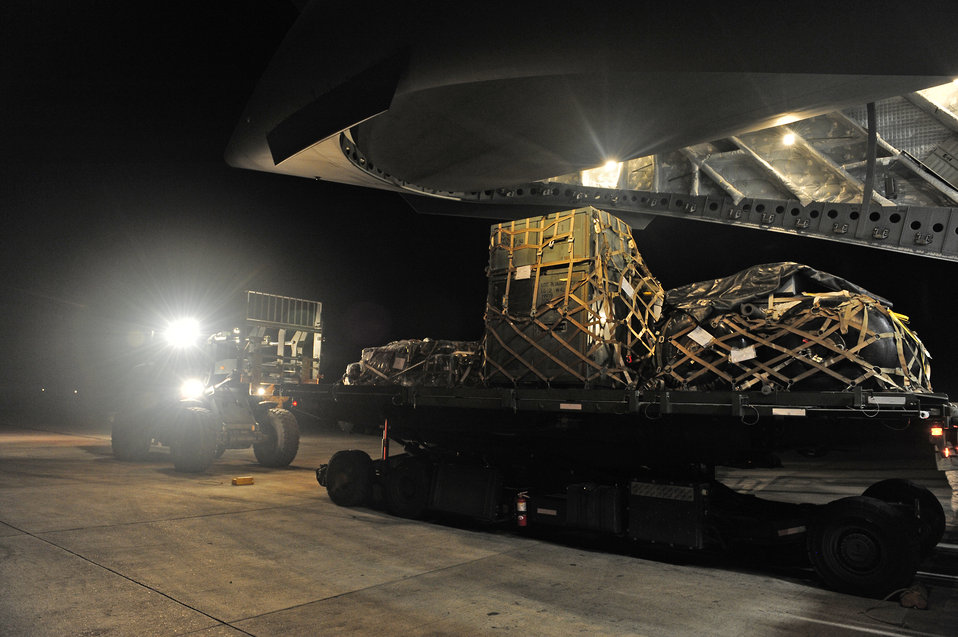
Haiti Earthquake Relief

Airmen offload cargo from a C-17 Globemaster III aircraft from Charleston Air Force Base, S.C., Jan. 15, 2010, at the Port-au-Prince airport in Haiti in support of relief efforts in the aftermath of a devastating earthquake. The Airmen are assigned to the 621st Contingency Response Wing at Joint Base McGuire-Dix-Lakehurst, N.J.